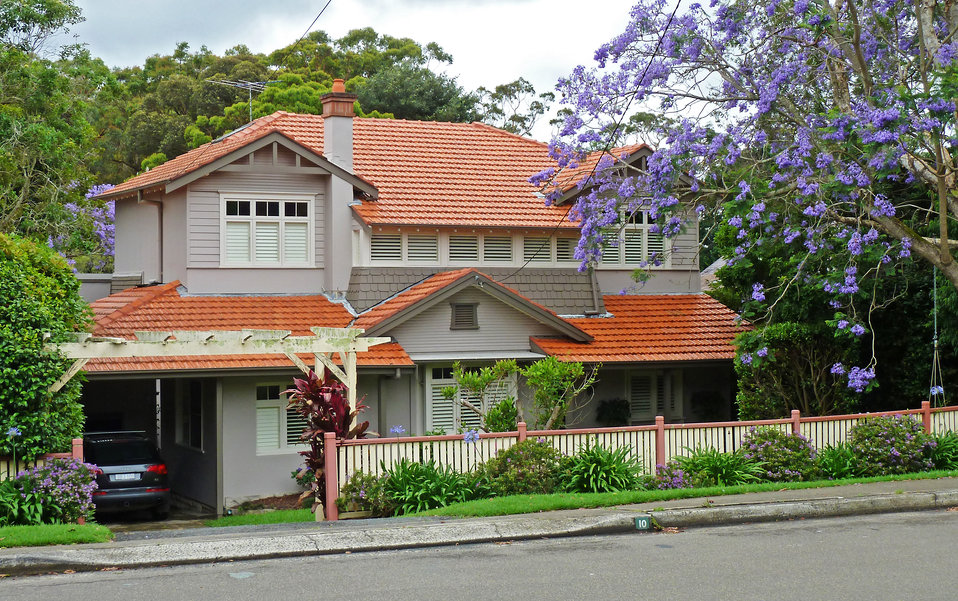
10 Northcote Road, Lindfield, New South Wales, Australia.